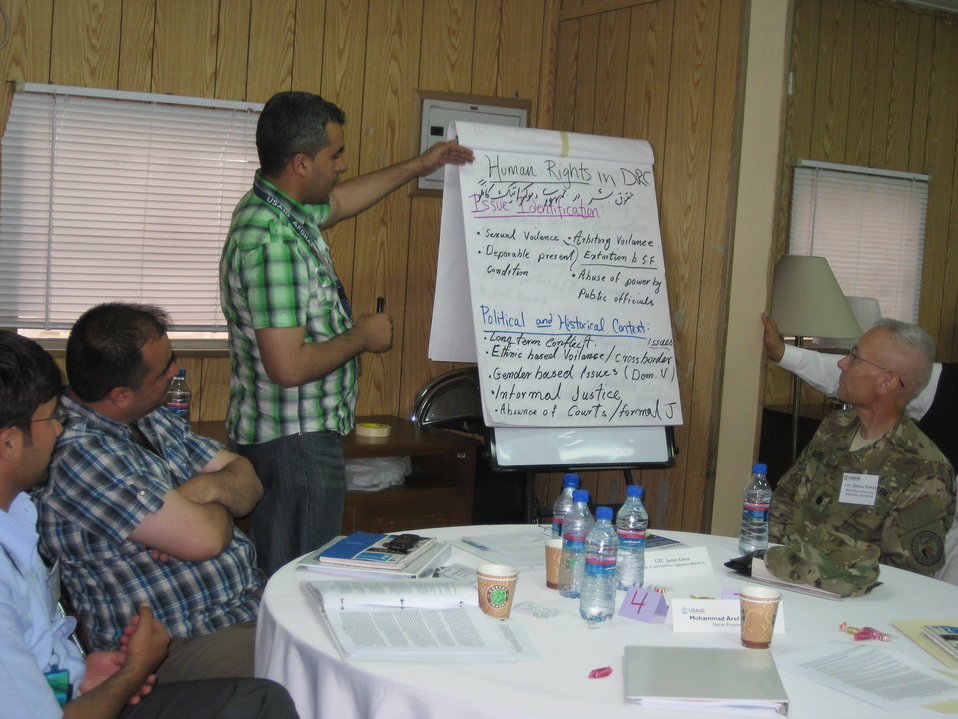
Afghan Youth Voices 027